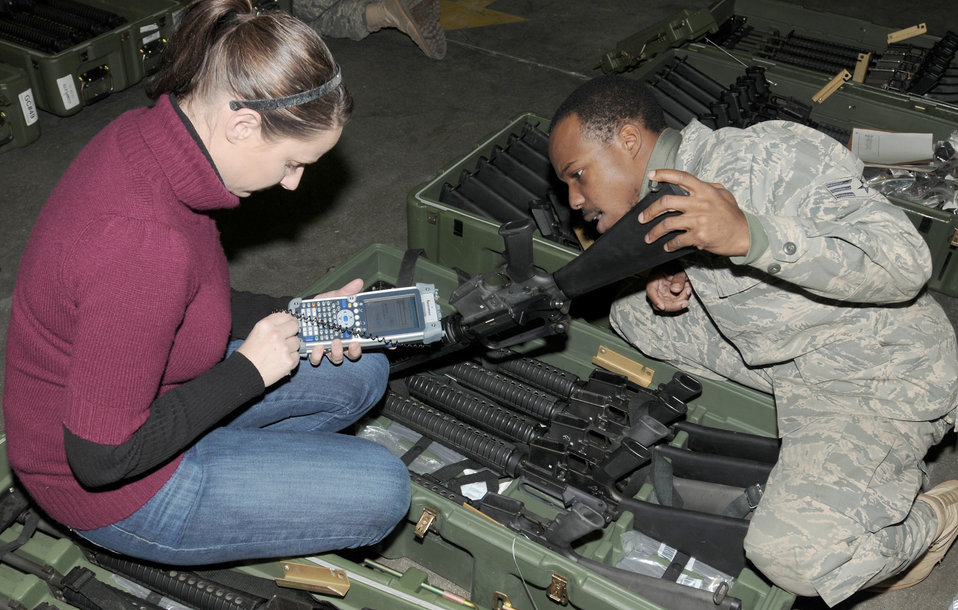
Aviano begins AMT

Lorae Gudgel and Senior Airman Rashon Forbes scan a barcode on a weapon for inventory Dec. 17, 2010, as part of the new asset marking and tracking system being implemented at Air Force installations around the world. Each piece of equipment is being marked with a unique bar code that, when scanned, will provide the serial number and equipment information, including what the piece of equipment is, to which base it belongs and to whom it has been issued. Ms. Gudgel is a marking technician with A2B Company. Airman Forbes is a document control technician with the 31st Logistics Readiness Squadron.